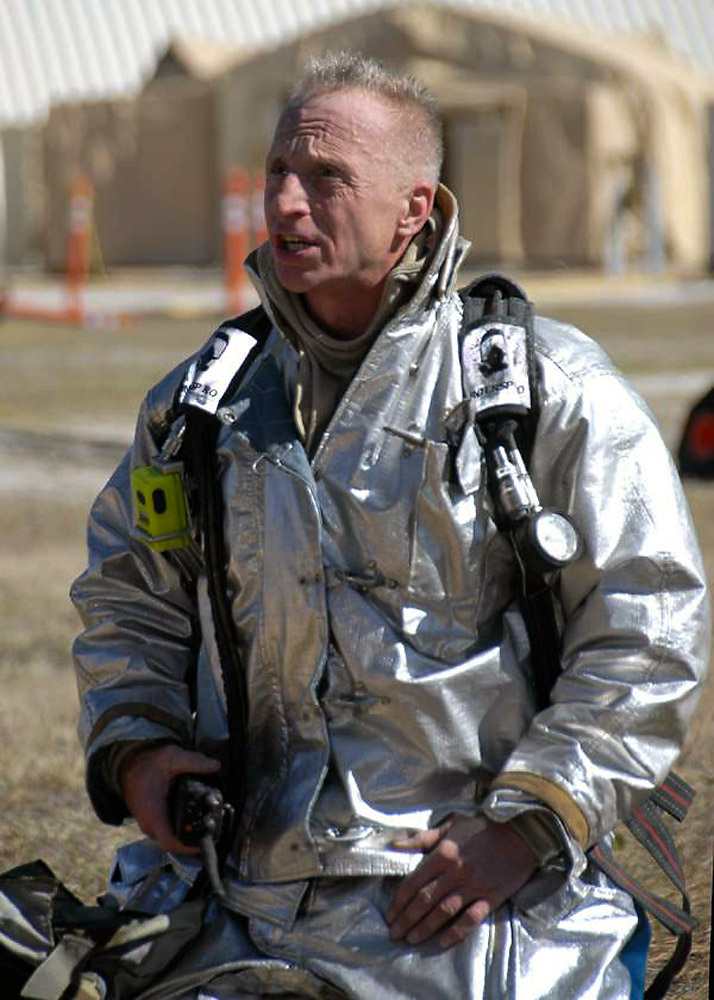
Silver Flag

Master Sergeant Thomas J. Miskiv from the 104th Fighter Wing, Massachusetts Air National Guard catches his breath after fighting a simulated house fire during the Civil Engineering Silver Flag exercise held on February 5, 2009. The Civil Engineering Squadron Silver Flag exercise is an annual training exercise conducted at Tyndall Air Force Base Florida to train military personnel within their career fields.